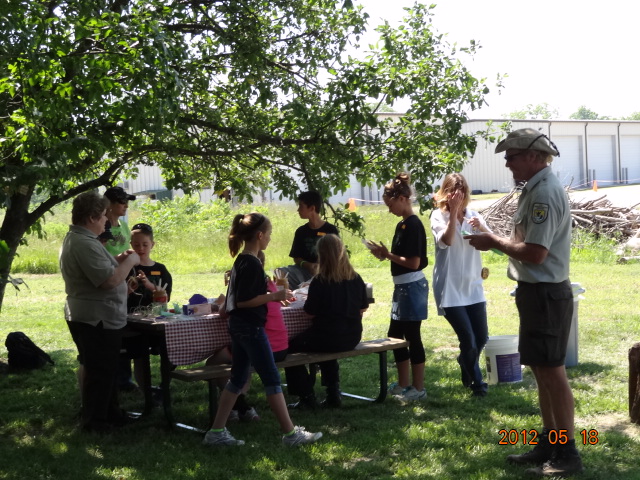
International Migratory Bird Day 2012

Marais des Cygnes National Wildlife Refuge